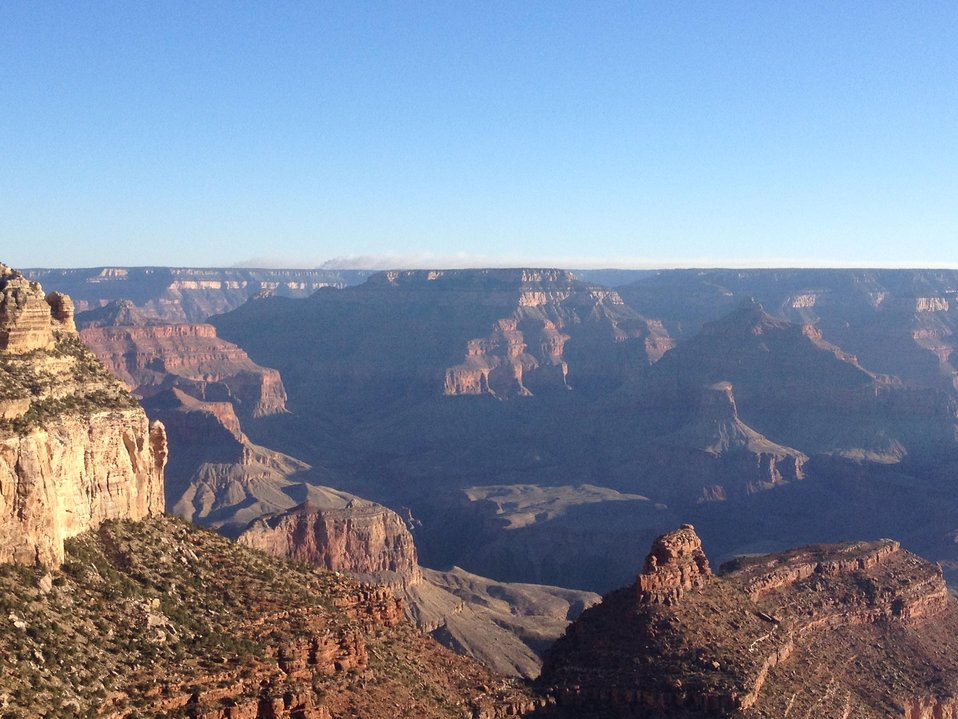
The sun rises on the Galahad Fire on May 31, 2014 as smoke rises on the North Rim. The Galahad Fire on the North Rim on the Walla Valley Peninsula in the Grand Canyon National Park in Arizona began on May 23, 2014 from lightening and has consumed 2, 950 acres to date and is 30% contained.